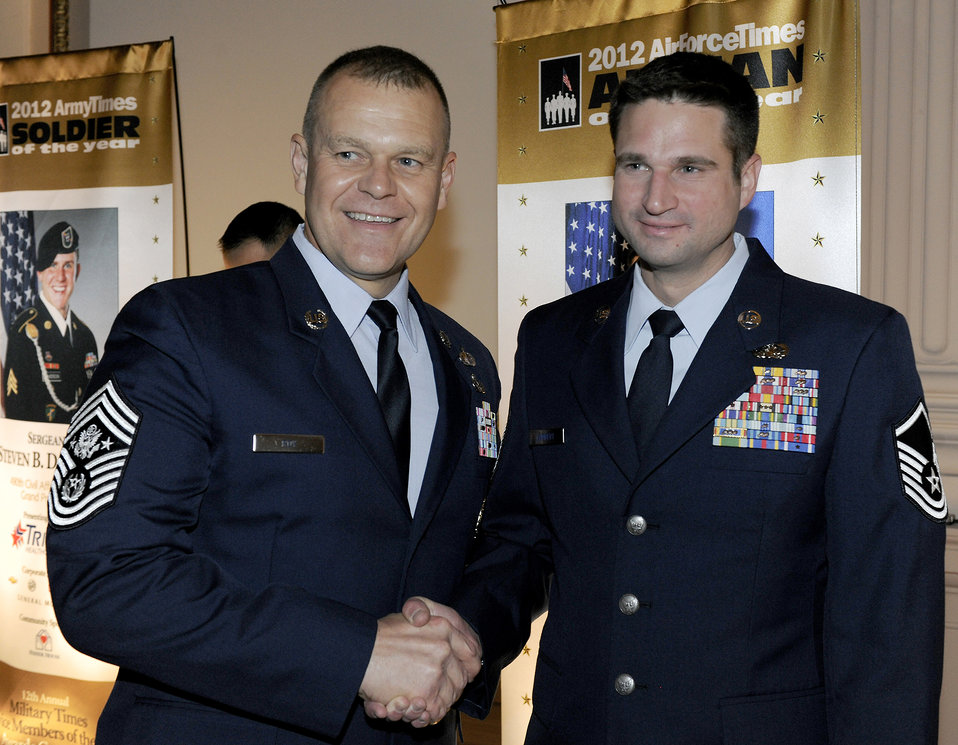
Times Airman of the Year

Chief Master Sergeant of the Air Force James A. Roy congratulates Master Sgt. Brandon Lambert of the 728th Air Control Squadron, Eglin Air Force Base, Fla., on his selection as the 2012 Air Force Times Airman of the Year during the 2012 Military Times’ Service Members of the Year Awards awards ceremony July 19, 2012, in Washington, D.C.